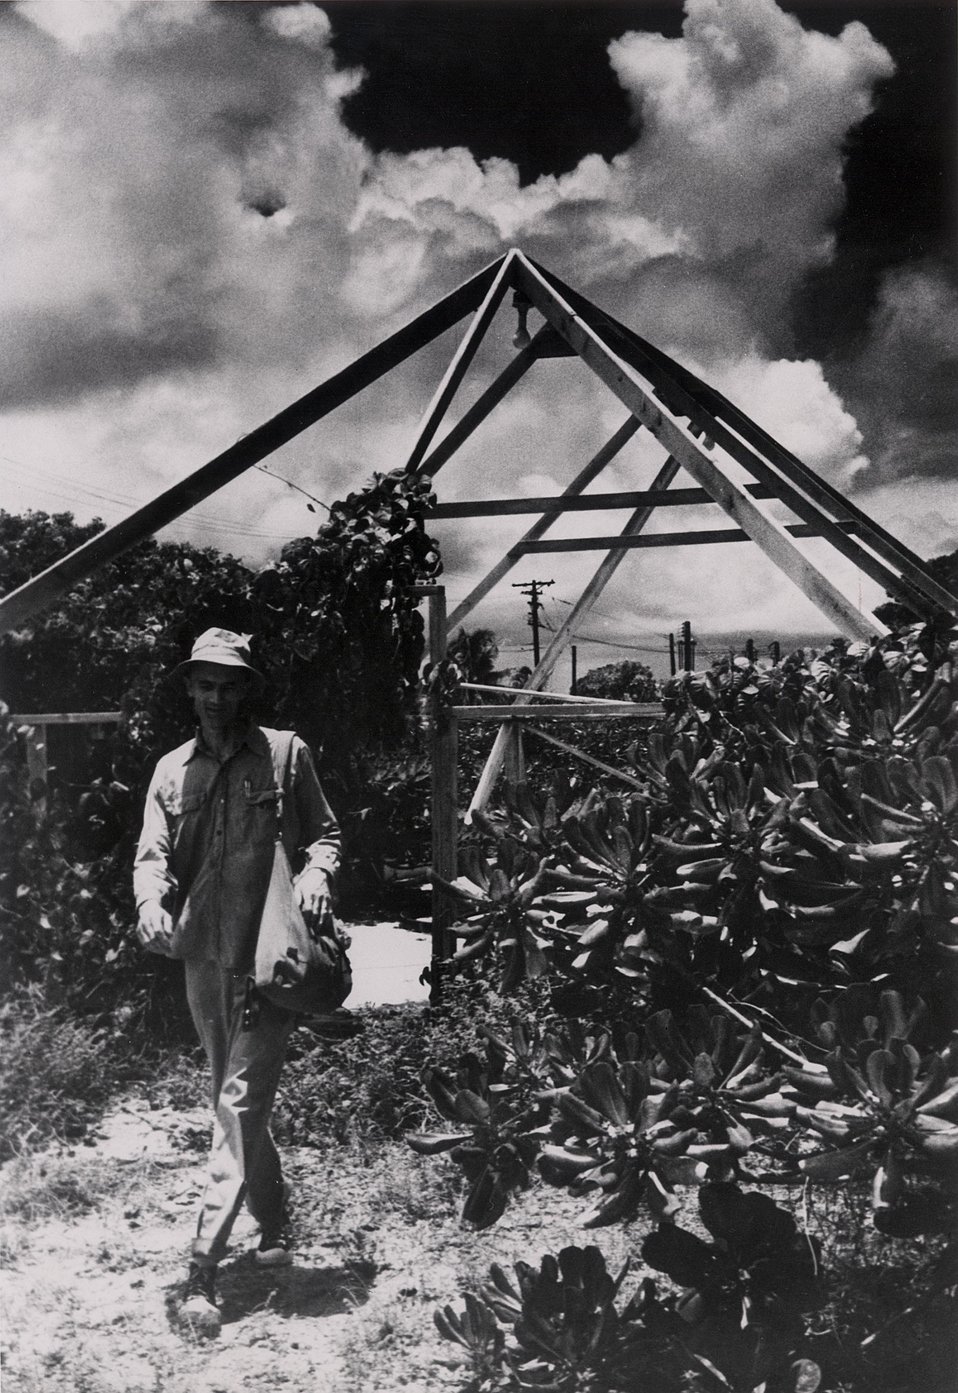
Scientists check the condition of Bikini after nuclear tests.